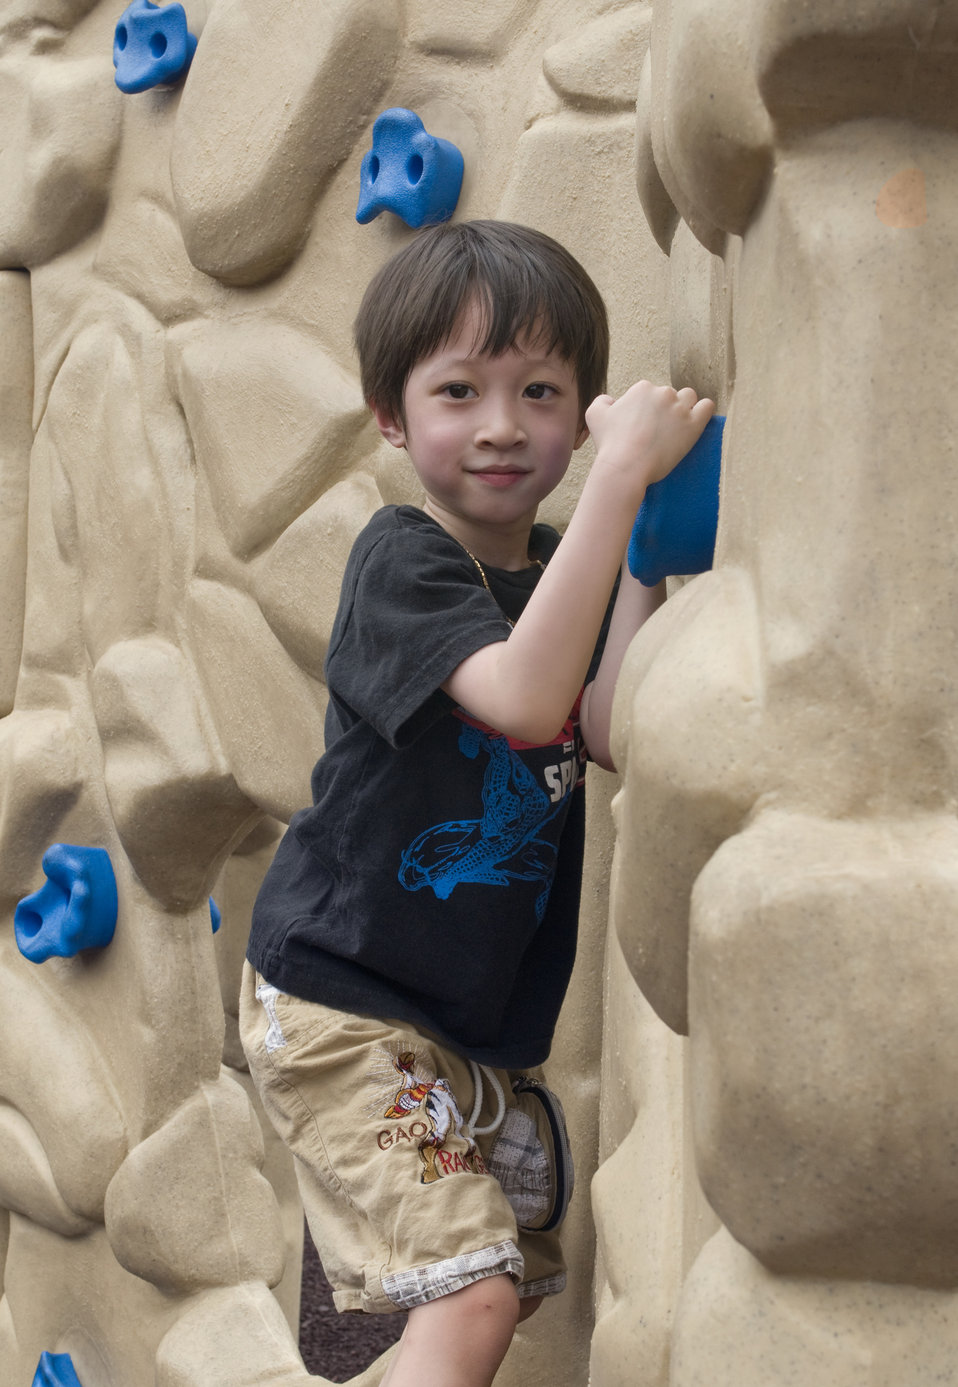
A young boy climbing a rock wall

This young boy was attempting to climb a fabricated rock wall. Note that he was wearing a darkly-colored t-shirt, and denim shorts.